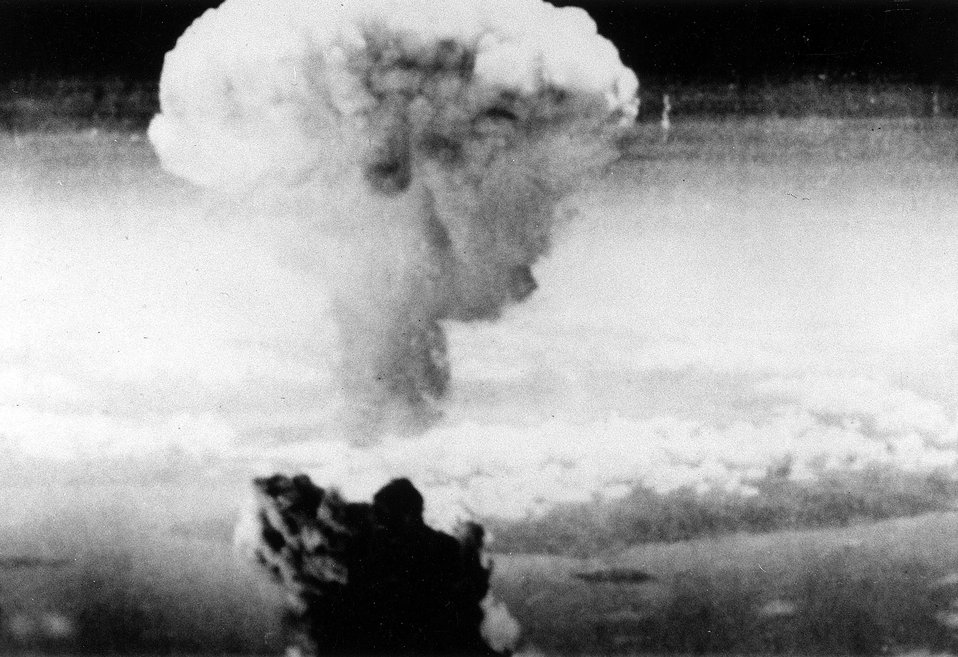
Nagasaki.